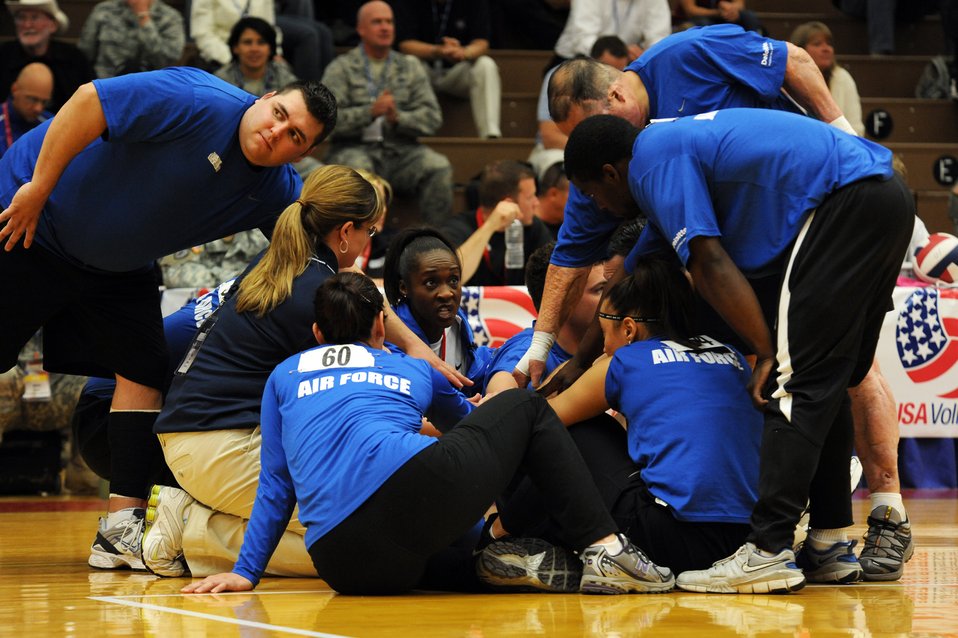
AF Volleyball wins Bronze at Warrior Games

Head Coach Nicki Marino and Air Force Tech. Sgt. Elisha Abercrombie give the Air Force team a pep talk during the Warrior Games sitting volleyball match against Army at the U.S. Olympic Training Center in Colorado Springs, Colo., May 13, 2010.